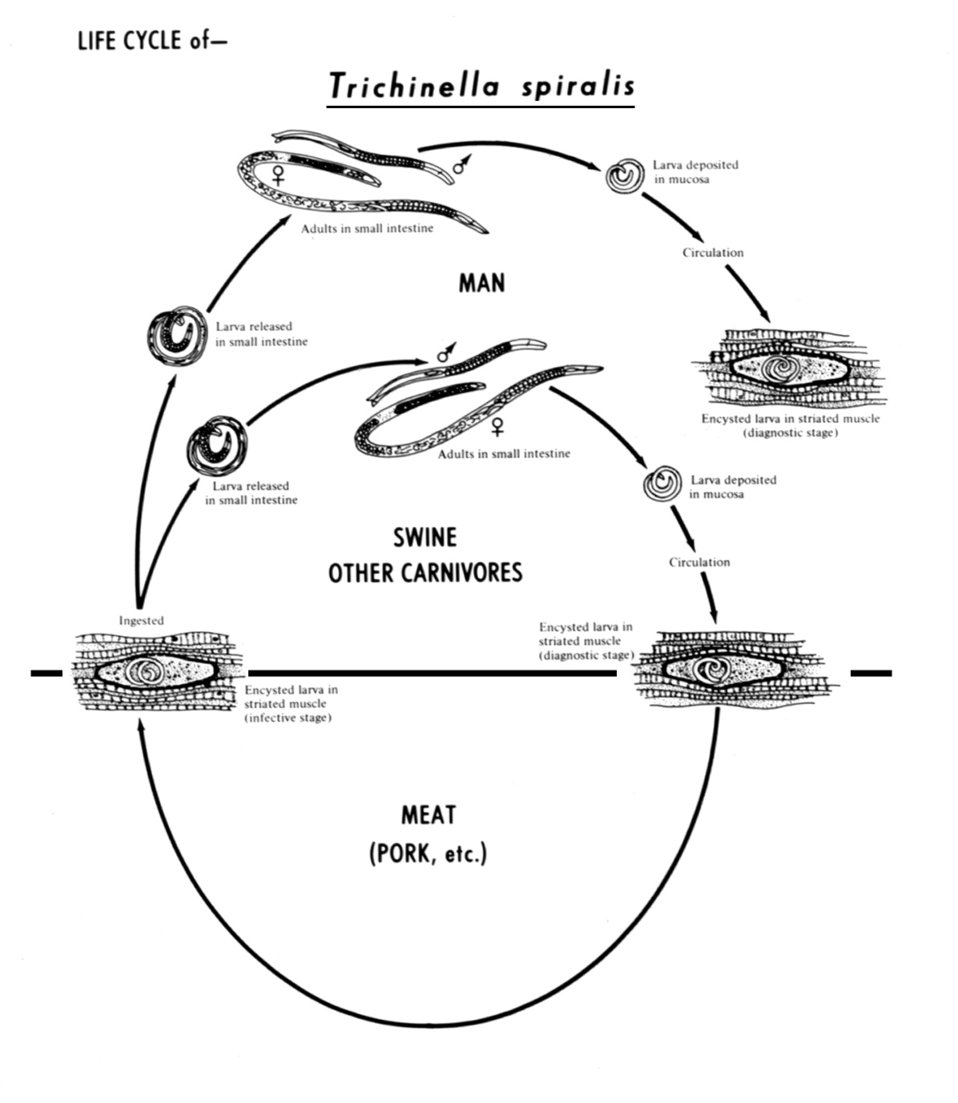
This diagram depicts the various stages in the life cycle of the nematode Trichinella spiralis.